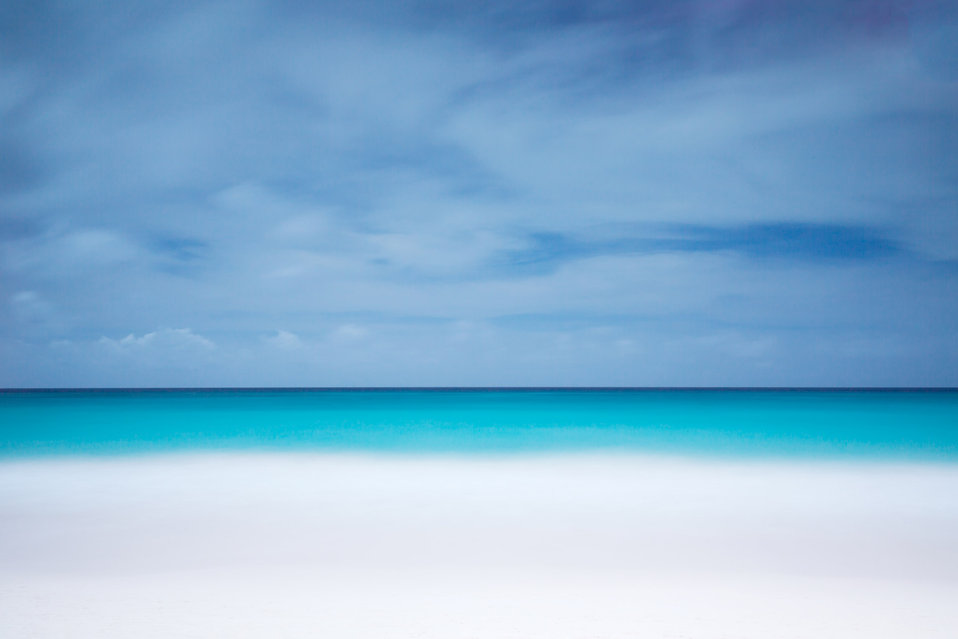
Beach wallpaper

White sand and blue sky wallpaper.